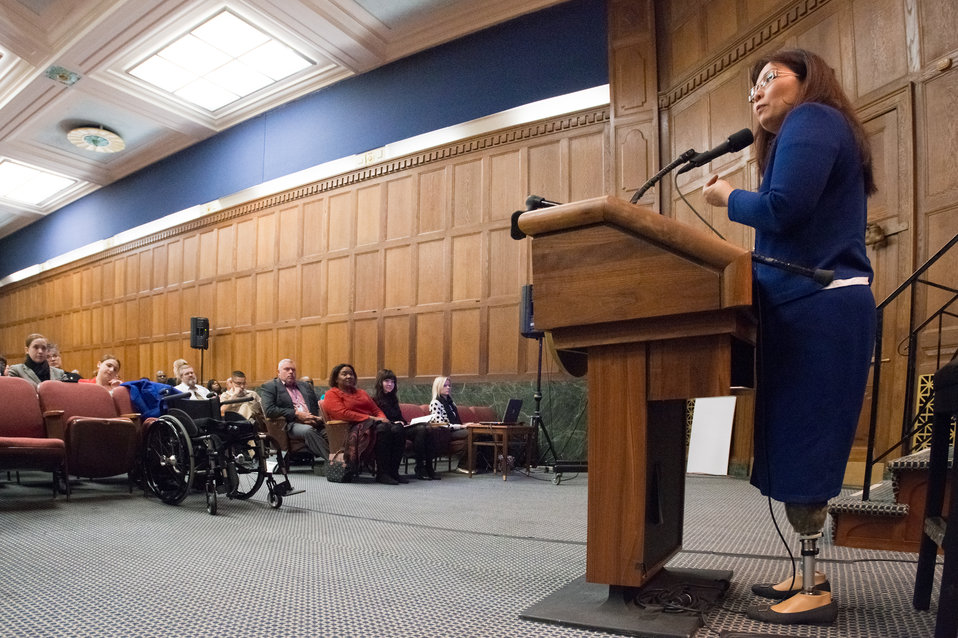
U.S. Congresswoman Tammy Duckworth (D.-Ill.) is the keynote speaker at the 2013 U.S. Department of Agriculture (USDA), Veterans’ Day Observance, whose theme is “VALOR, COURAGE, SACRIFICE – HONORING ALL WHO SERVED,” in Washington, DC, on Wednesday, November 20, 2013. Congresswoman Tammy Duckworth is an Iraq War Veteran and former Assistant Secretary of Veterans Affairs. In 2004, Duckworth was deployed to Iraq as a Blackhawk helicopter pilot for the Illinois Army National Guard. She was one of the first Army women to fly combat missions during Operation Iraqi Freedom until her Blackhawk helicopter was hit by an RPG on November 12, 2004. Duckworth lost her legs and partial use of her right arm in the explosion and was awarded a Purple Heart for her combat injuries. Duckworth declined a military medical retirement and continues to drill as a Lieutenant Colonel in the Illinois Army National Guard.